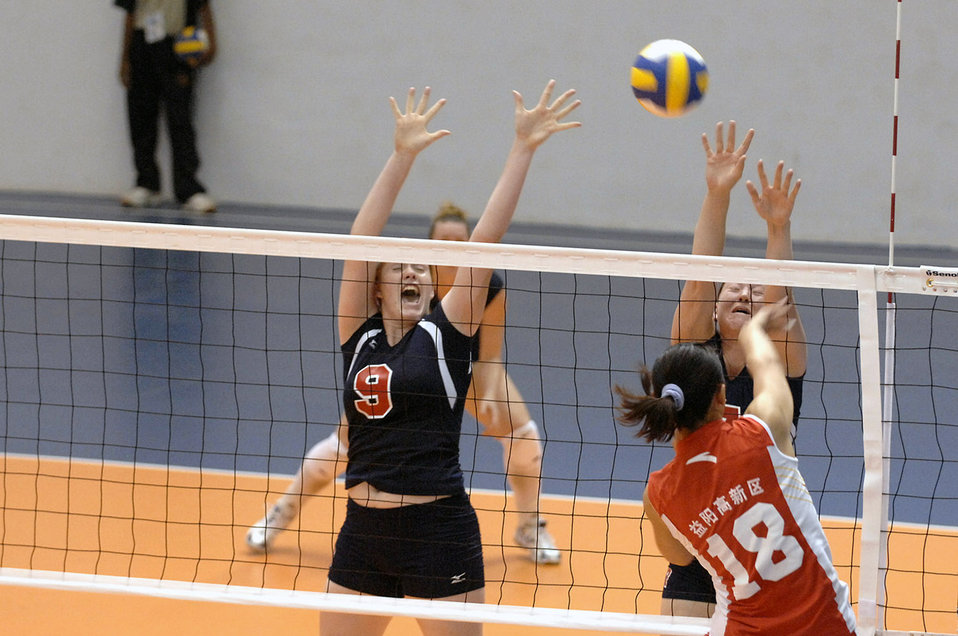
4th CISM World Military Games

Spc. Sarah Lusk and Ens. Ashley Kins try to block a shot by 2nd Lt. Liu Xiaojing of China during the U.S. women's first volleyball game at the Military World Games in Hyderabad, India. The U.S. women fell to the Chinese team in three games, 25-15, 25-11, 25-7. The Conseil Internationale du Sport Militaire's Military World Games event is the largest international military Olympic-style event in the world. In this year's fourth edition of the Games, 103 countries and more than 5,000 athletes are competing Oct. 14 to 21 in boxing, diving, soccer, handball, judo, military pentathlon, parachuting, sailing, shooting, swimming, volleyball and track and field. The purpose of the Military World Games is to promote